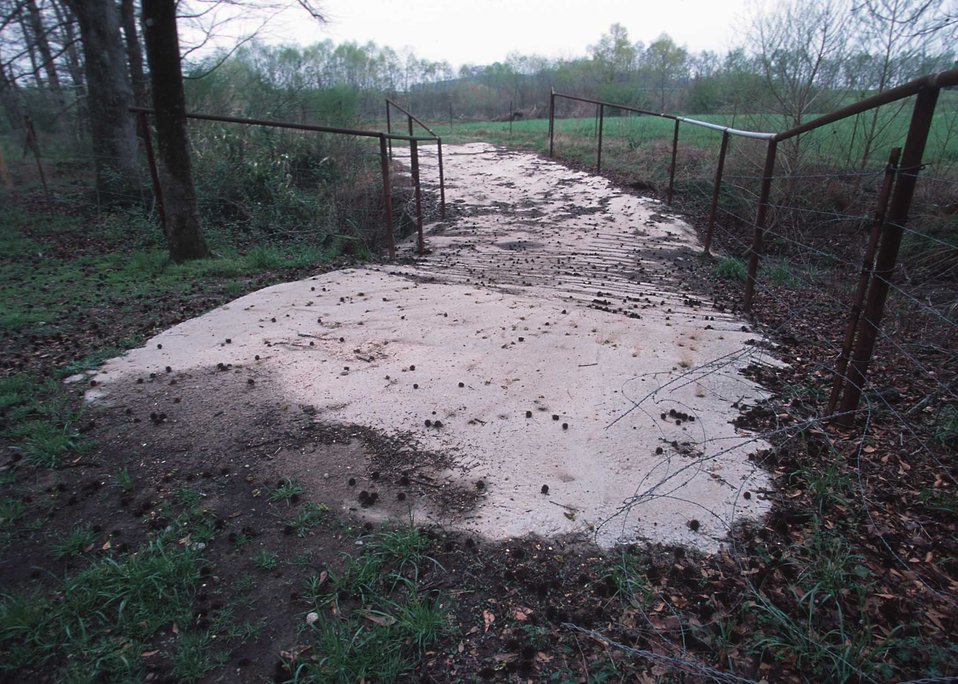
Concrete water crossing for livestock. Buffers and fencing for livestock exclusion are also part of the NRCS practices Georgia.